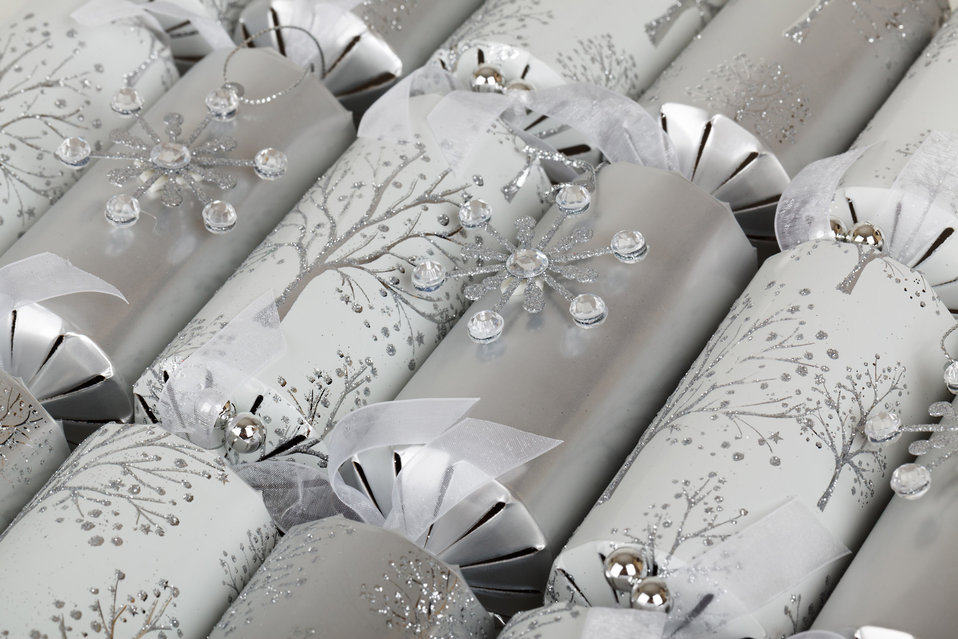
Christmas crackers background

Silver christmas crackers background image.